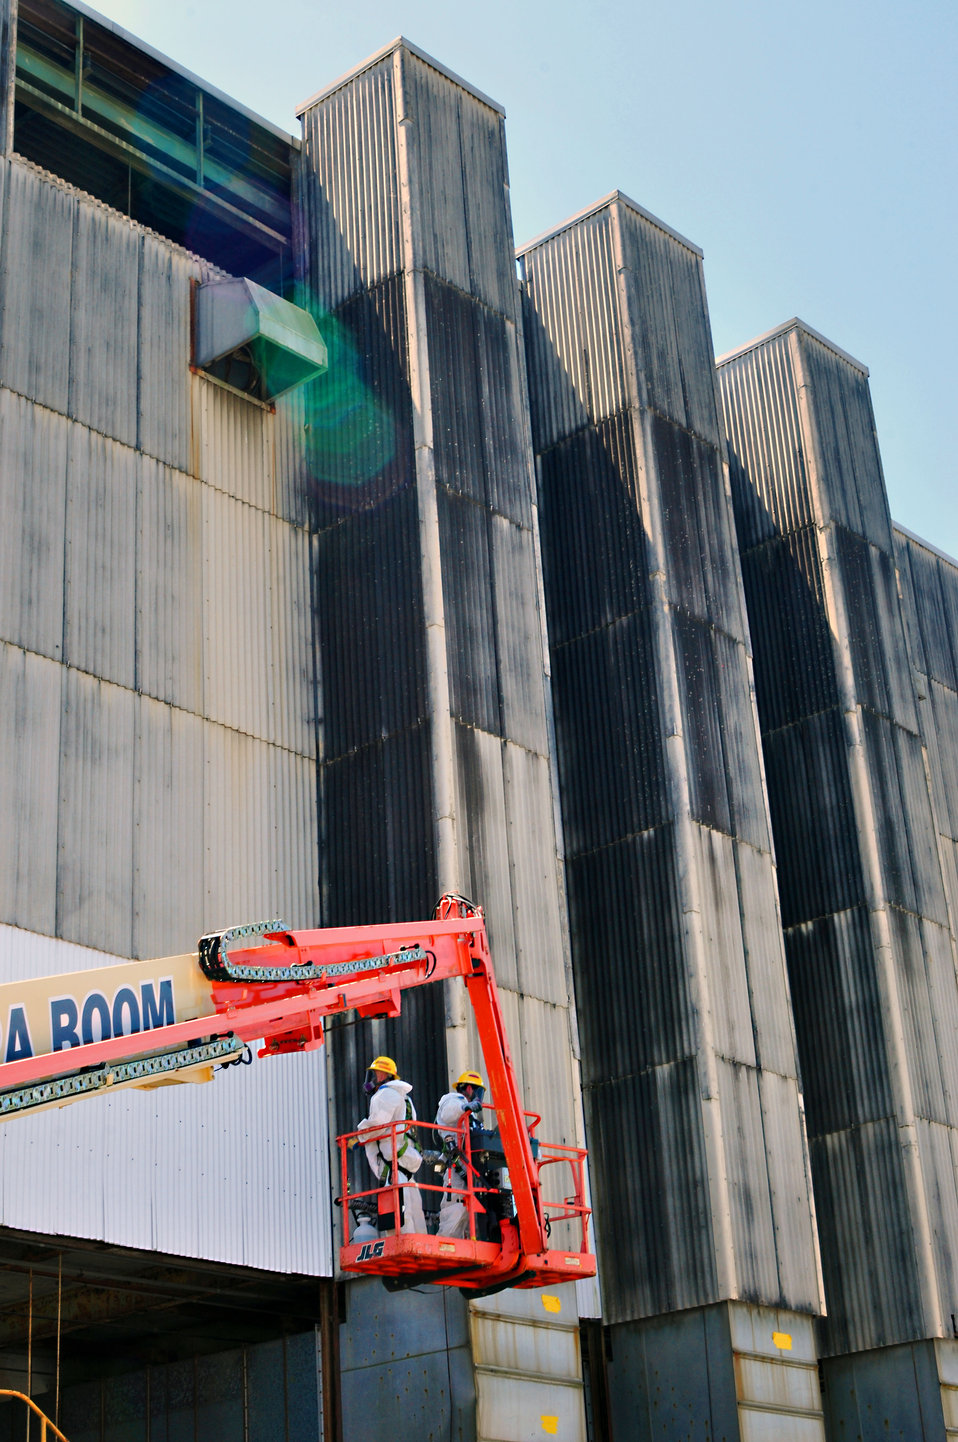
Transite Panels Removal from K-31 Building 2014 Oak Ridge

14-057 DOE photo Lynn Freeny 5-6-2014 ETTP K-31 Oak Ridge Tennessee